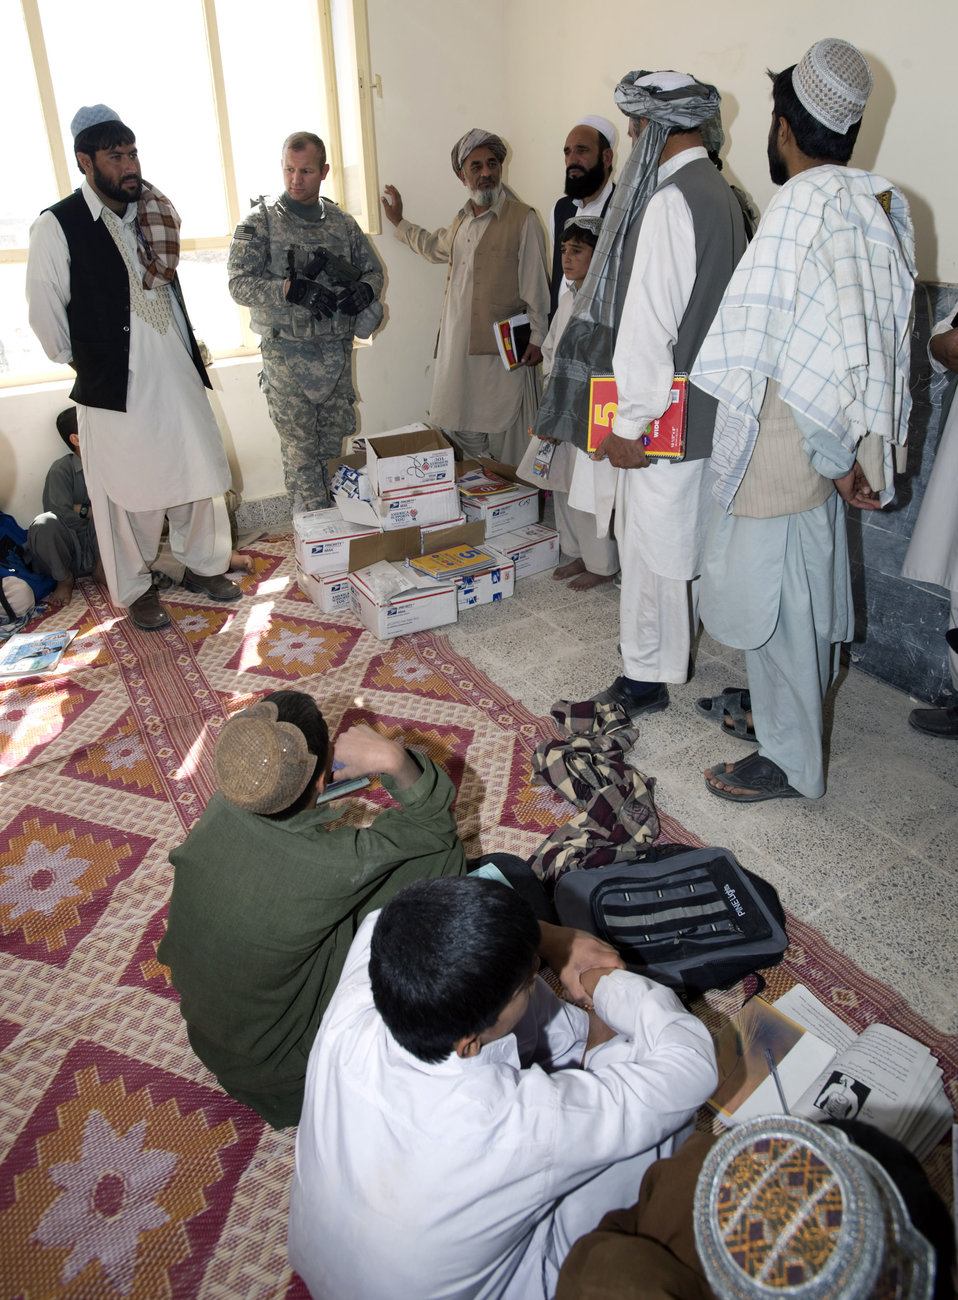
School supplies light up Afghan student's eyes

Army Maj. Trever Nehls and school leaders talk with students about the supplies being donated to them. The Zabul Provincial Reconstruction Team delivered a truck full of school supplies donated from the Westfield Community School in Algonquin, Ill. Major Nehls, PRT civil affairs leader, is deployed from the 451st Civil Affairs Battalion, Pasadena, Texas.